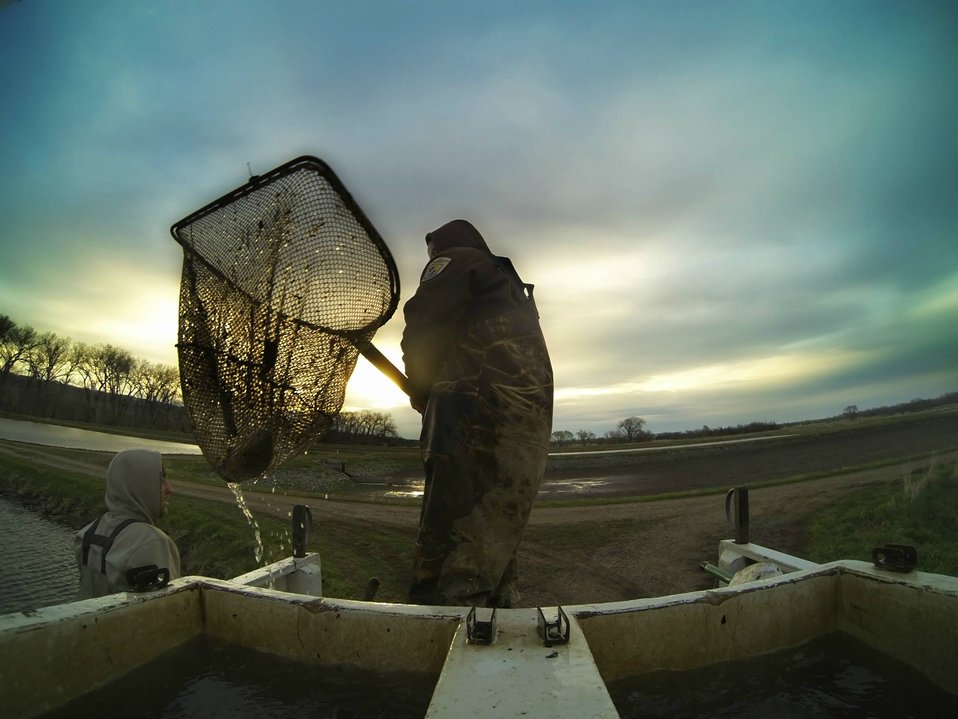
Spring Morning

It was a cold morning with our warm water fish.

Today we separated our largemouth bass, bluegill and black crappie. They will naturally spawn in their new ponds and we will return to pick up their fry in a few months.